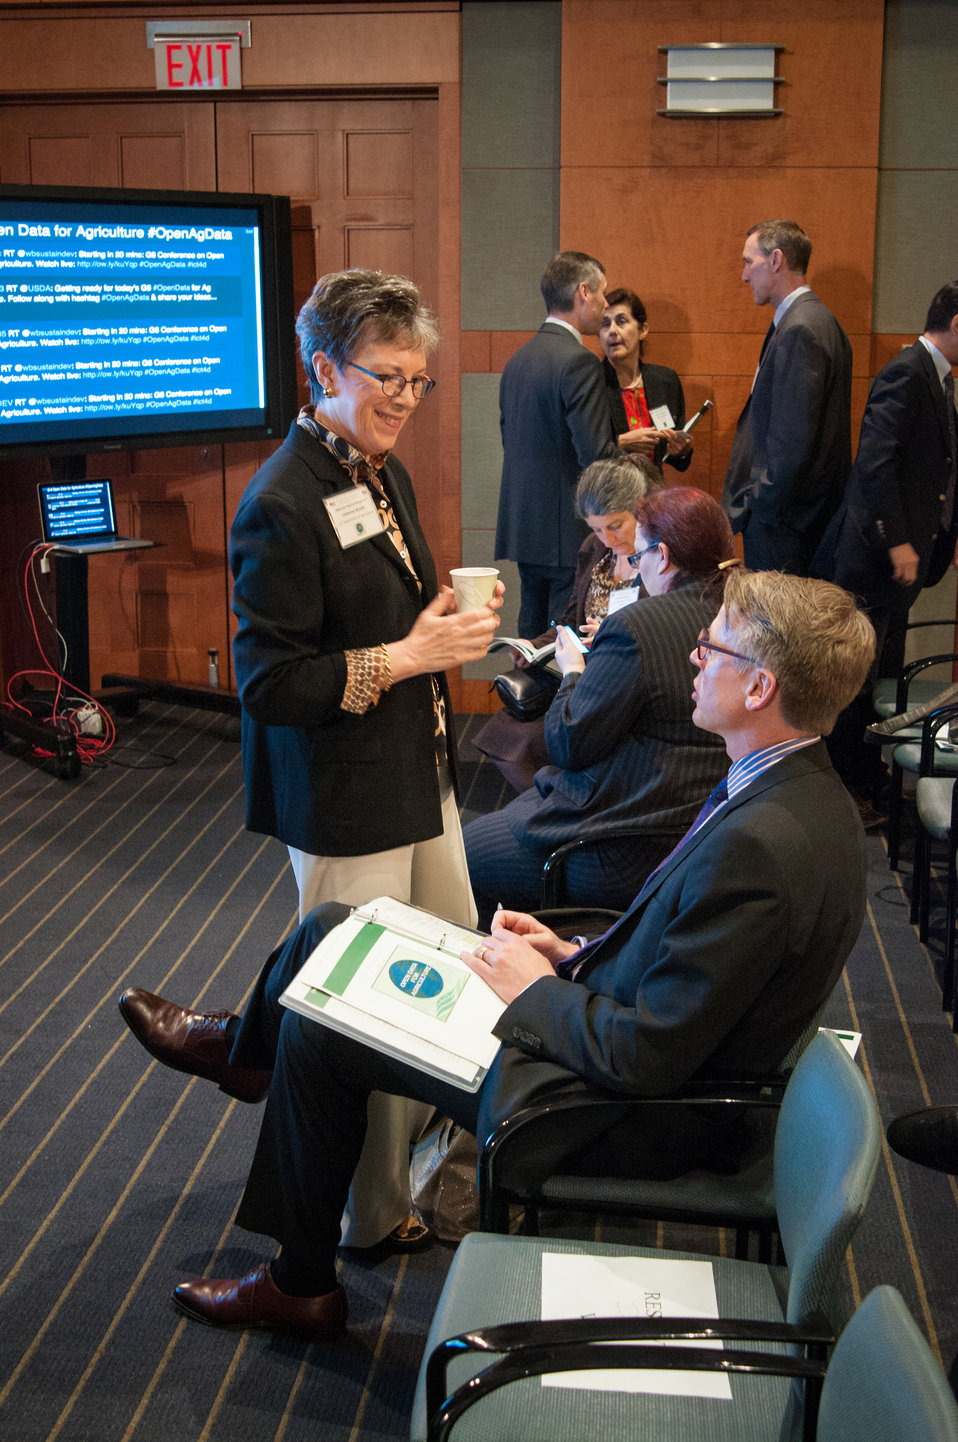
Agriculture Under Secretary for Research, Education, and Economics (REE) Dr. Catherine Woteki and World Bank Host and Master of Ceremonies Chris Vein discuss the days events at the G-8 International Conference on Open Data for Agriculture Washington, D.C. on Monday, Apr. 29, 2013. The conference launched a new 'virtual community' of Food, Agriculture, and Rural data on Data.gov-the U.S. Government's data sharing website-to catalogue America's publicly available agricultural data and increase the ability of the public to find, download, and use datasets that are generated and held by the Federal Government. The data community features a collection of more than 300 newly cataloged datasets, databases, and raw data sources related to food, agriculture, and rural issues from agencies across the U.S. Government. In addition to the data catalog, the virtual community shares a number of applications, maps and tools designed to help farmers, scientists and policymakers improve global food security and nutrition.